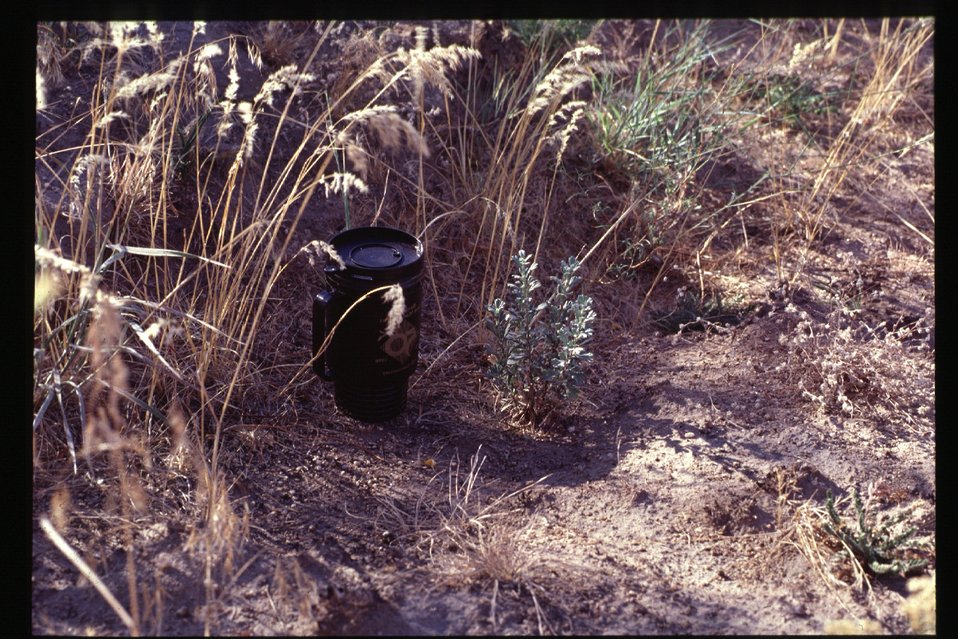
8th Street Fire Four Rivers Field Office LSRD Lower Snake River District